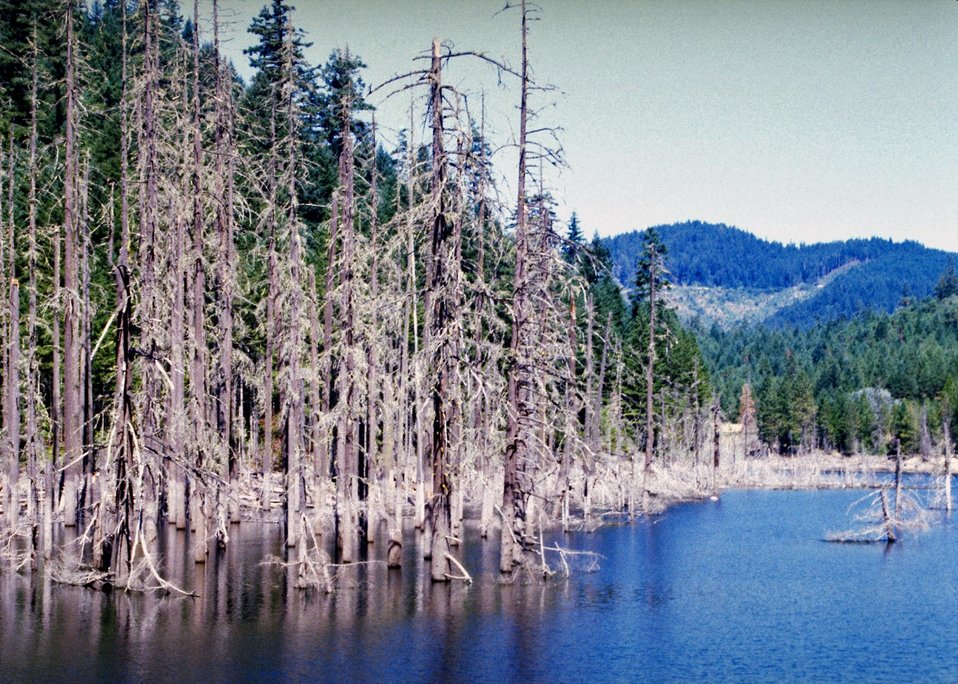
Trees standing in the water of Galesville Reservoir.